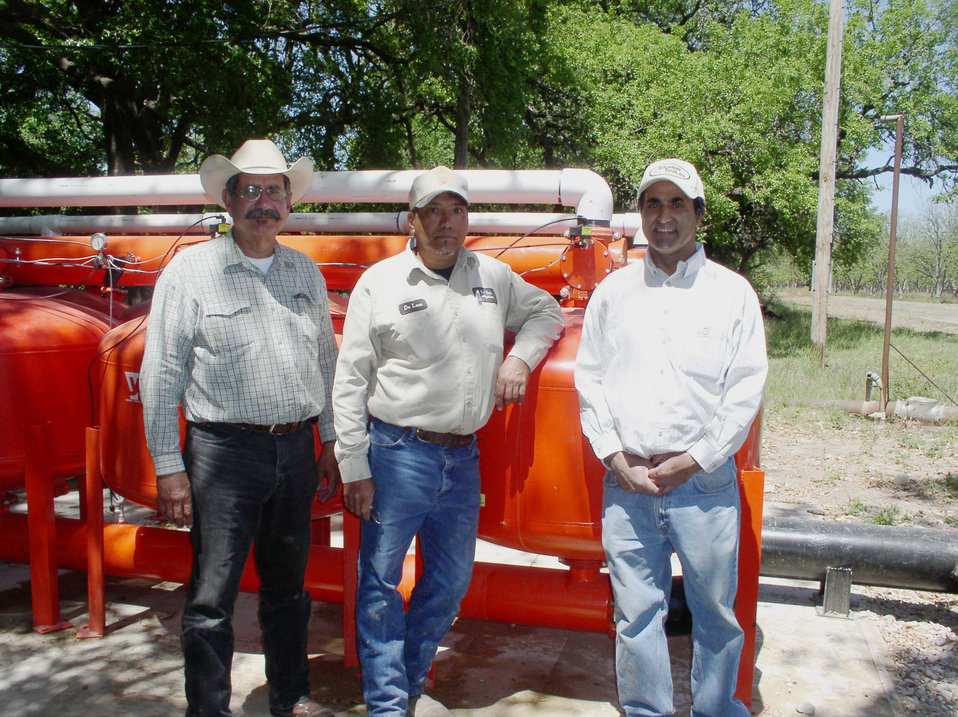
(L. to r.) U.S. Department of Agriculture (USDA) Natural Resources and Conservation Service (NRCS) District Conservationist J. M. Villarreal, Irrigation Contractor R. DeLeon and Arrowhead Farms owner Akram Mohammad at the micro irrigation filtration station on his farm in Crystal City, TX, on Thursday, April 8, 2010, near the completion of installation of a underground micro irrigation system that feeds water to the roots of 4,380 pecan trees on 146 acres. Mr. Mohammad said, “USDA (U.S. Department of Agriculture) was essential to my business and trees surviving the recent exceptional drought. The trees were stress free thanks to underground micro-irrigation. This is essential to the future growth of Texas agriculture and good for America.” U.S. Department of Agriculture’s (USDA) Environmental Quality Initiative Program (EQIP) awarded Mr. Mohammad a $130,000 grant in 2008. He provided $26,000 for the balance of the $156,000 total cost to install a 146-acre underground micro-irrigation for 4,380 trees.